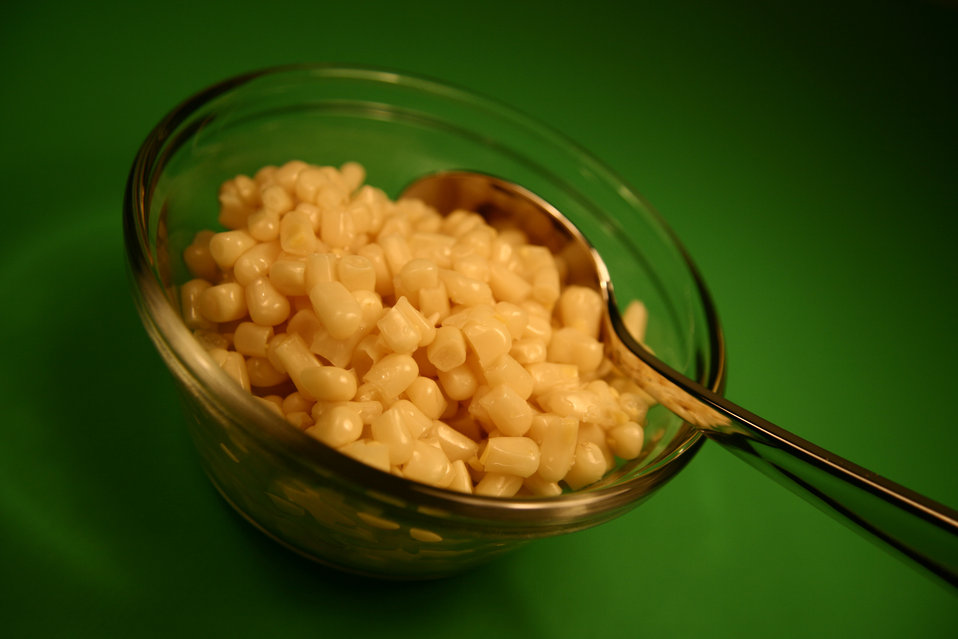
High in its vitamin C content, the cooked corn kernels contained in this small glass bowl, bore a bright yellow color, and were accompanied by a shiny silver teaspoon. See PHIL 14412, for a closer view of this bowl of corn kernels.